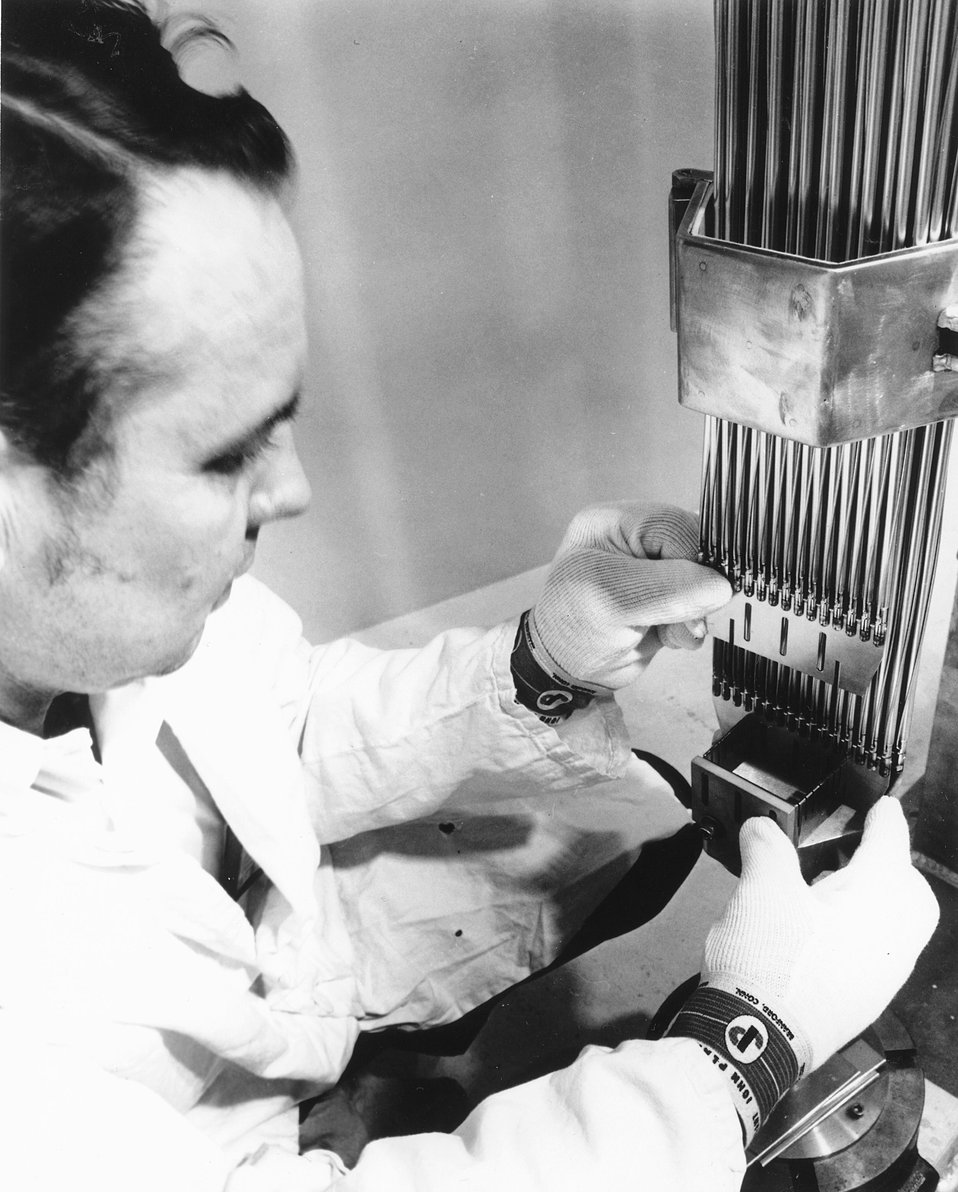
A WADCO technician assembles a portion of the 217 pin sub assembly prior to completion of the fuel bundle for Fast Flux Test Facility (FFTF) Candidate fuels. c. 1971